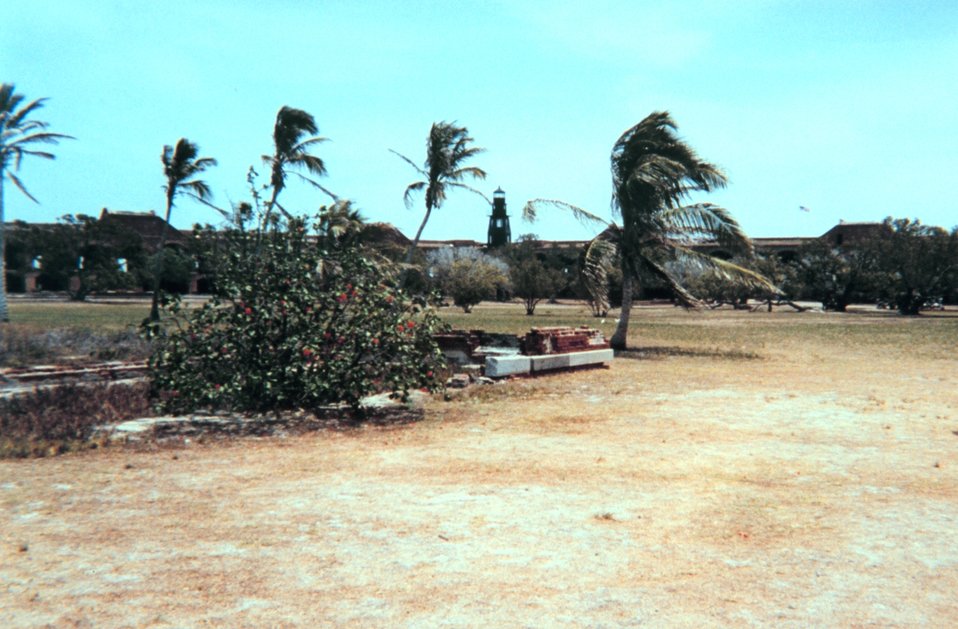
The lighthouse as seen from the far end of the parade ground at Fort Jefferson. The configuration of the palm trees is testimony to the force and continuity of the trade winds in this area.